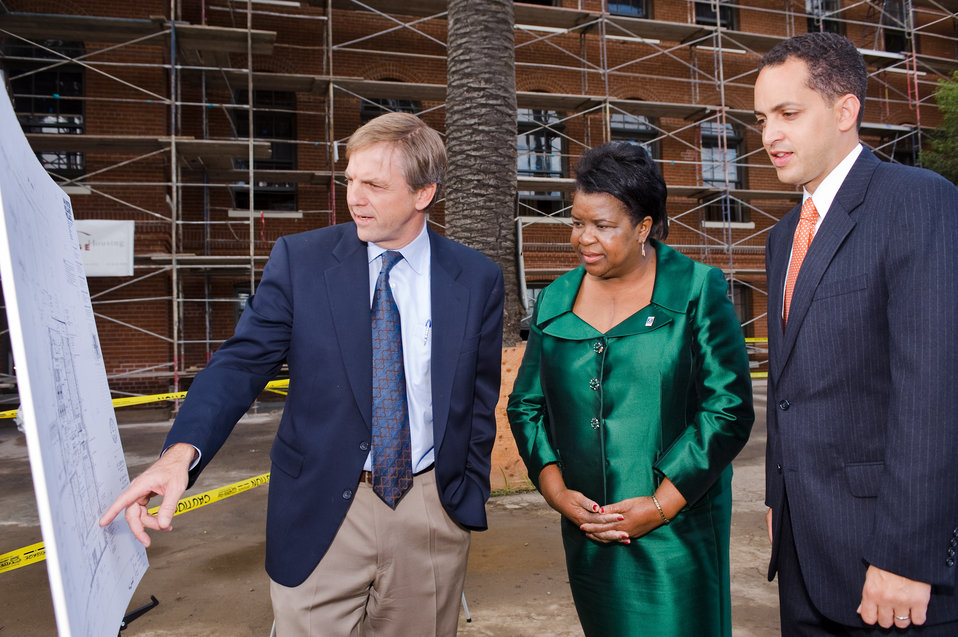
CDFI Awards for the Development of Affordable Housing in Low-Income Communities in Oakland, CA, 10/14/10

Rick Holliday, Chairman of Bridge Housing, CDFI Fund Director Donna J. Gambrell and Deputy Assistant Secretary Don Graves review plans for St. Joseph’s Senior & Family Housing, an affordable housing development that hosted the inaugural award announcement of Treasury’s Capital Magnet Fund in Oakland, California.